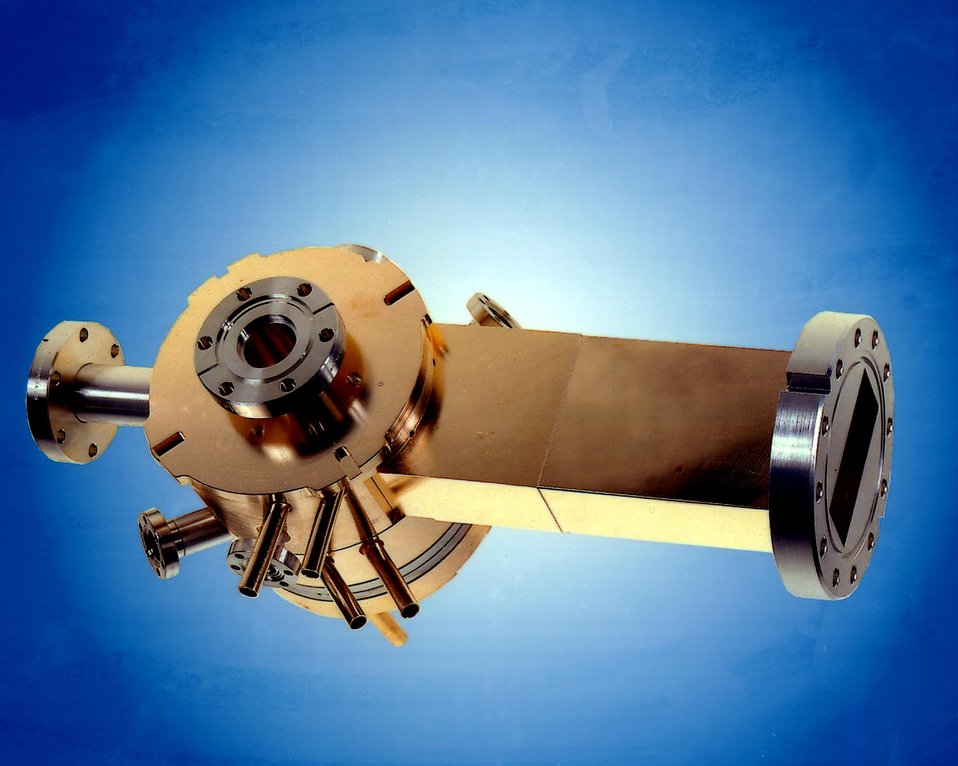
HIGH BRIGHTNESS ELECTRON GUN.

THE ATF, OPERATED BY THE NATIONAL SYNCHROTRON LIGHT SOURCE USED BY UNIVERSITIES, NATIONAL LABS AND INDUSTRY. THE DEVELOPMENT OF HIGH BRIGHTNESS ELECTRON BEAMS IS ONE OF THE MAIN RESEARCH INITIATIVES AT THE ATF. HIGH BRIGHTNESS MEANS THAT THE ELECTRON BUNCH HAS A HIGH DENSITY IN 6-D PHASE SPACE. TO ACHIEVE HIGH BRIGHTNESS BEAMS, IT IS NECESSARY TO MASTER THE PRODUCTION OF SUCH BEAMS IN SPECIAL ELECTRON GUNS.